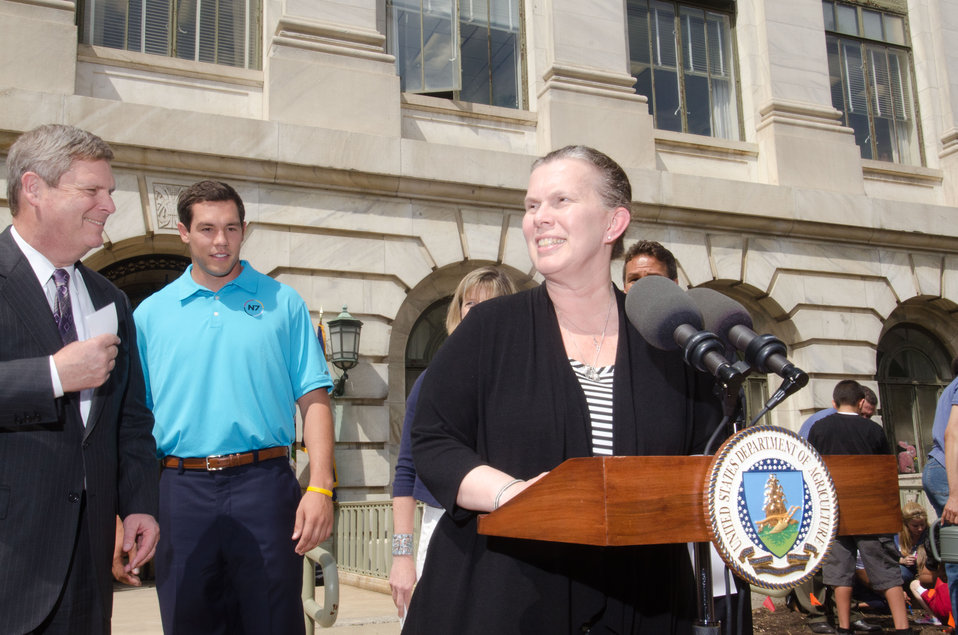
Opening remarks were made by Janie Hipp (at podium), Senior Advisor to Agriculture Secretary Tom Vilsack with the USDA Office of Tribal Relations, and behind her are Secretary Vilsack (blue tie), St. Louis Rams Quarterback Sam Bradford (blue shirt); Executive Director of First Lady Michelle Obama’s Let’s Move! Campaign Robin Schepper; and Director of the Bureau of Indian Education Keith Moore who all met at the U.S. Department of Agriculture to encourage Native American Youth to pursue a healthy lifestyle on Wednesday, April 27, 20ll in Washington, DC. More than 30 Students (seen to the right) from Eastern and Western Tribes, Southeast Alaska, and Tuba City, Arizona came to the Nation’s Capitol to plant vegetable seeds that are indigenous to North America. Bradford is a citizen of the Cherokee Nation. The garden is called The Roots of American Agriculture, and is part of the Headquarters’ People’s Garden.